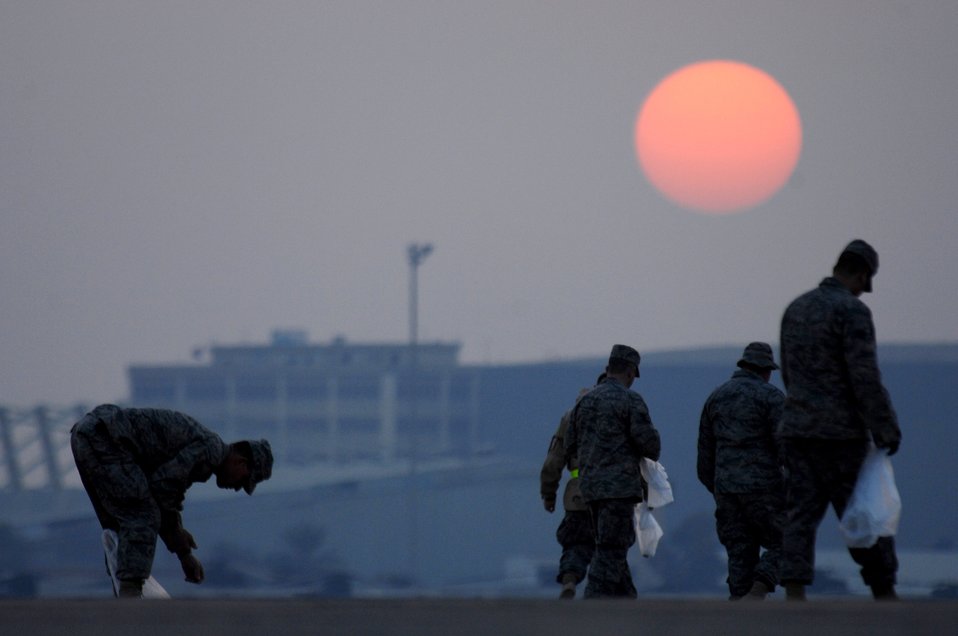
Walking the walk

Airmen from the 447th Air Expeditionary Group search for debris Feb. 9 that might have ended up on the flight line at Sather Air Base, Iraq. Known as a